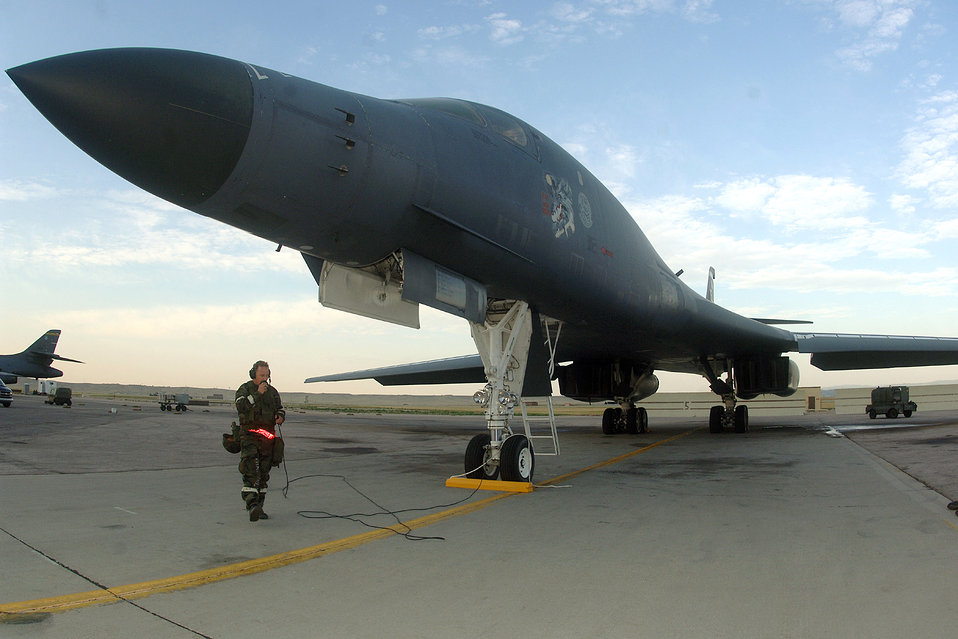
Routine checkup

Staff Sgt. Lee Falder performs a routine check on a B-1 Lancer during an operational readiness inspection at Ellsworth Air Force Base, S.D., on July 18. Pre-checks include avionics, control surfaces and engine runs. Sergeant Falder is assigned to the 28th Aircraft Maintenance Squadron.